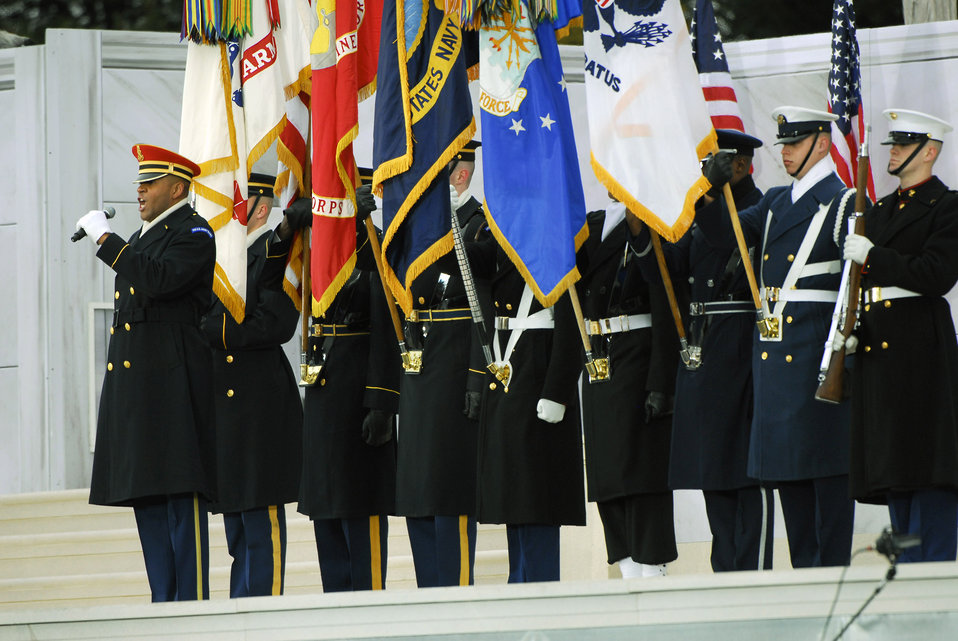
Attention Armed Forces!

U.S. Marine Corps Master Sgt. Caleb Green sings the national anthem Jan. 18 at the Lincoln Memorial in Washington, D.C., during a pre-inaugural ceremony. More than 5,000 men and women in uniform provided military ceremonial support to the presidential inauguration.